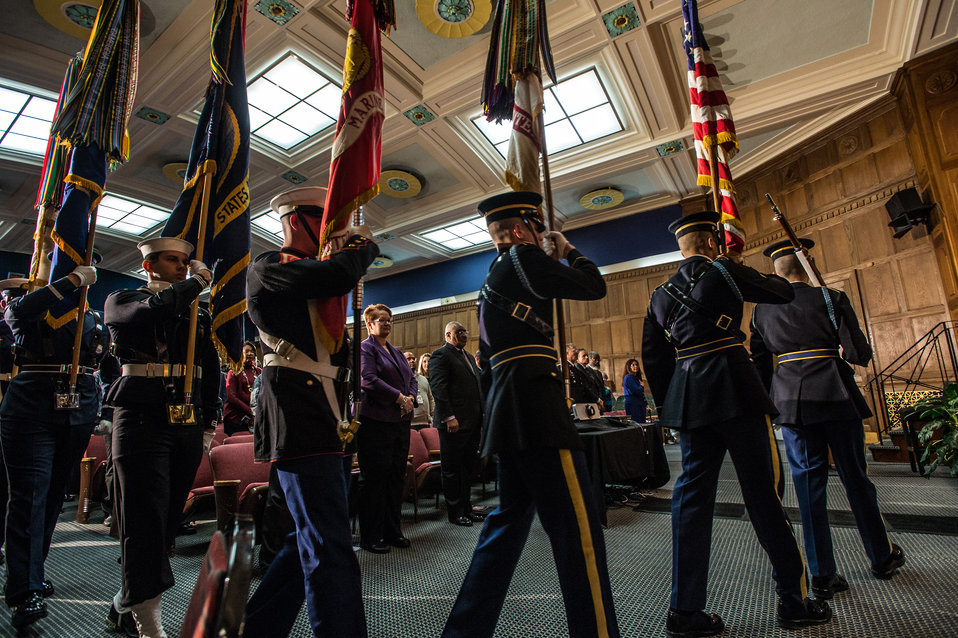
The U.S. Military District of Washington Joint Armed Forces Color Guard present the Colors, during the 2013 U.S. Department of Agriculture (USDA) Veterans’ Day Observance, whose theme is “VALOR, COURAGE, SACRIFICE – HONORING ALL WHO SERVED,” in Washington, DC, on Wednesday, November 20, 2013.